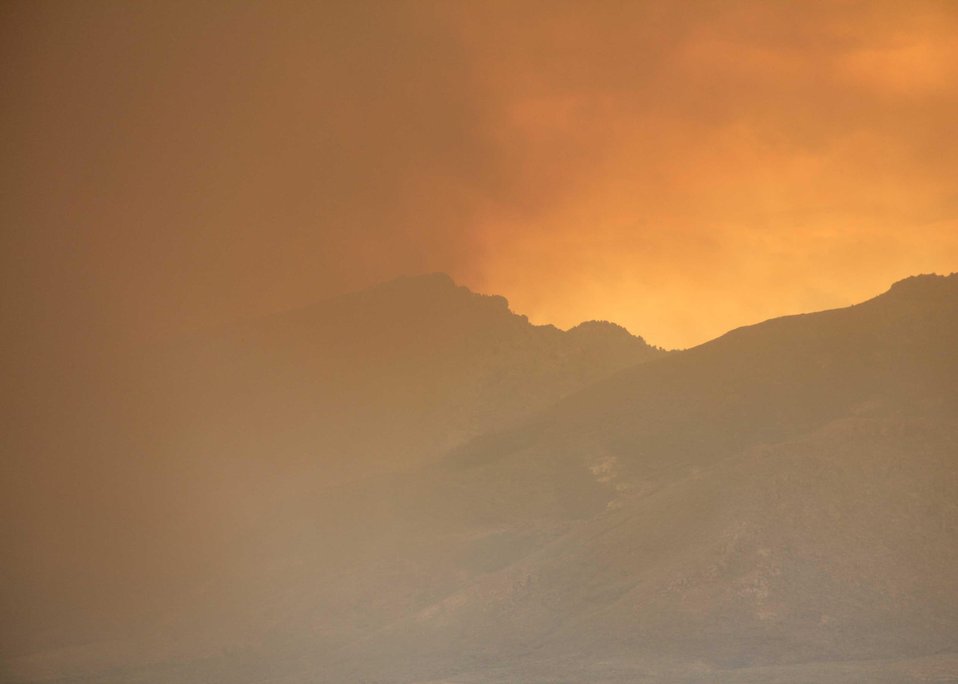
The Smith Ranch Fire located 10 miles northwest of Jiggs, NV began on Jul. 19, 2013 by lightning and has consumed approximately 2,759 acres. The Smith Ranch Fire is 100% contained.